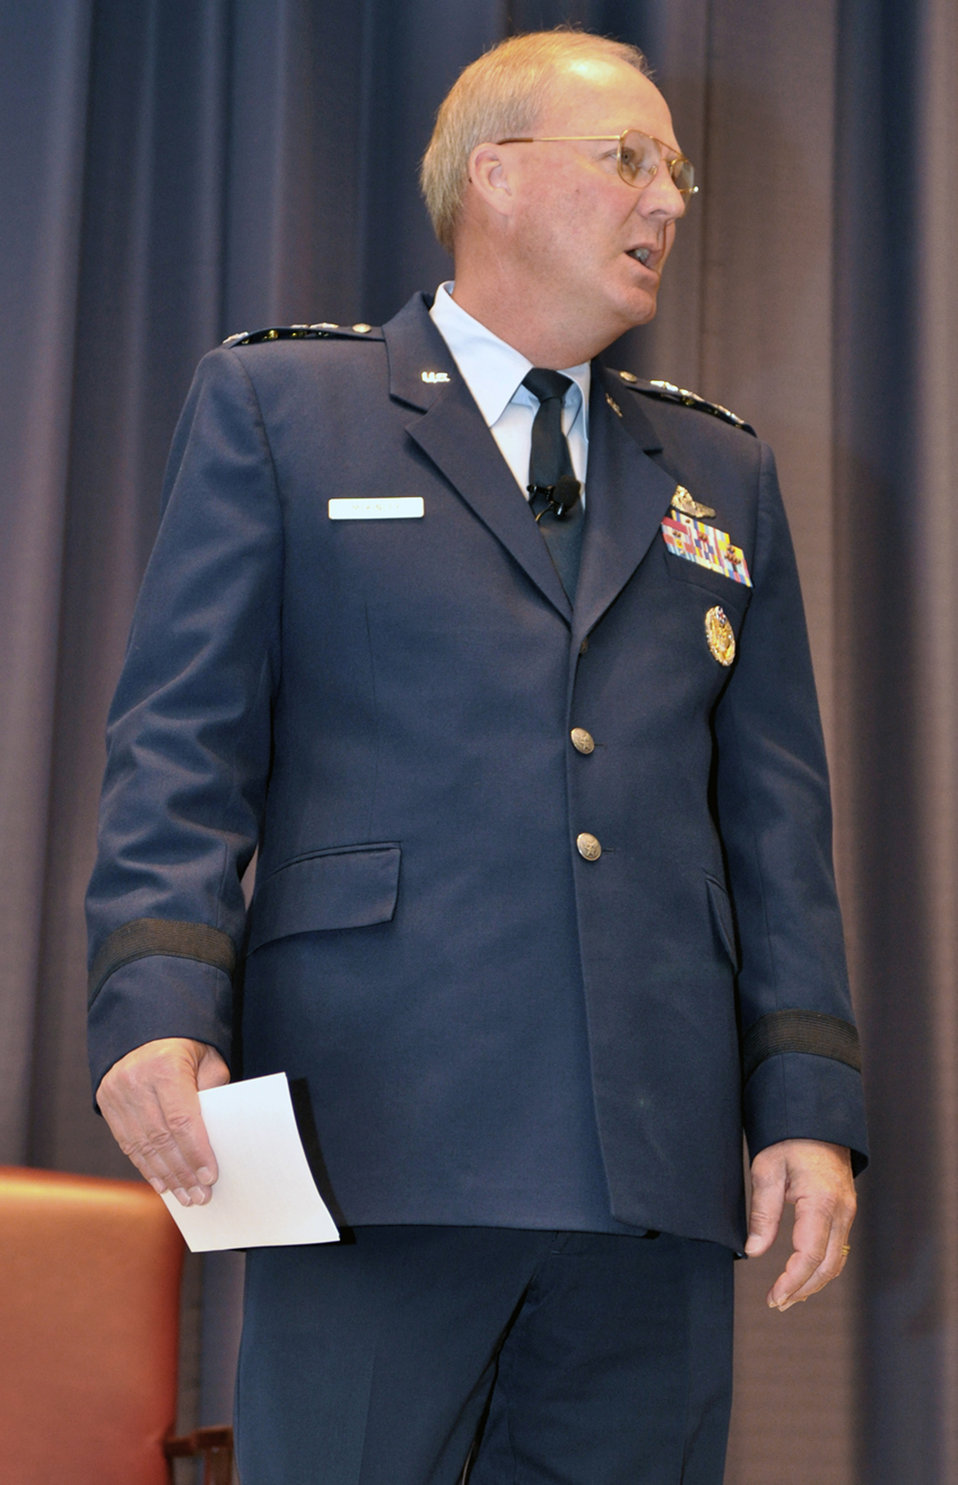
Guard chief emphasizes communication, collaboration, coordination

Gen. Craig R. McKinley talks to students at National Defense University May 27 at Fort Lesley J. McNair in Washington, D.C. He is the chief of the National Guard Bureau.